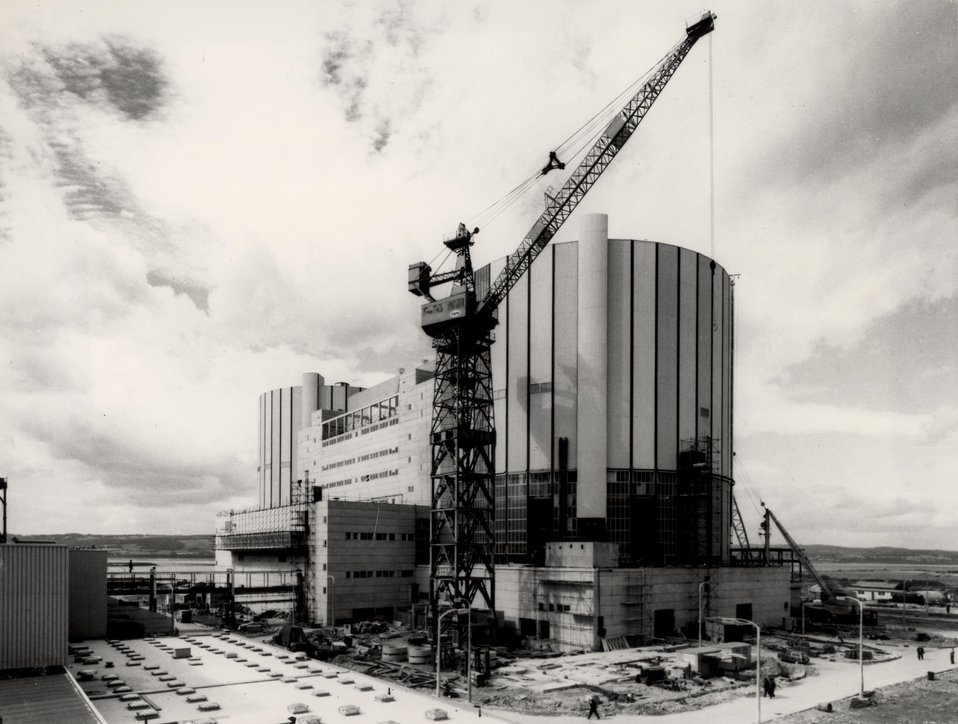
The Oldbury Nuclear Power Station is one of the largest in Great Britain. c. 1967